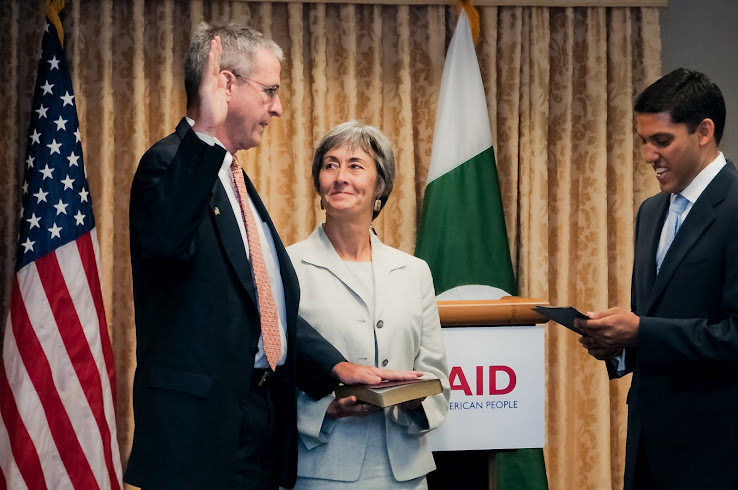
Jonathan Conly

WASHINGTON, D.C. – This week, Jonathan Conly was sworn in as the new U.S. Agency for International Development (USAID) Country Director for Pakistan. USAID Administrator Dr. Rajiv Shah presided over the ceremony and administered the oath in the presence of Mr. Conly’s family, friends, and colleagues, as well as members of the Pakistani-American community and the Pakistan Embassy’s Deputy Chief of Mission, Dr. Asad Majeed Khan.